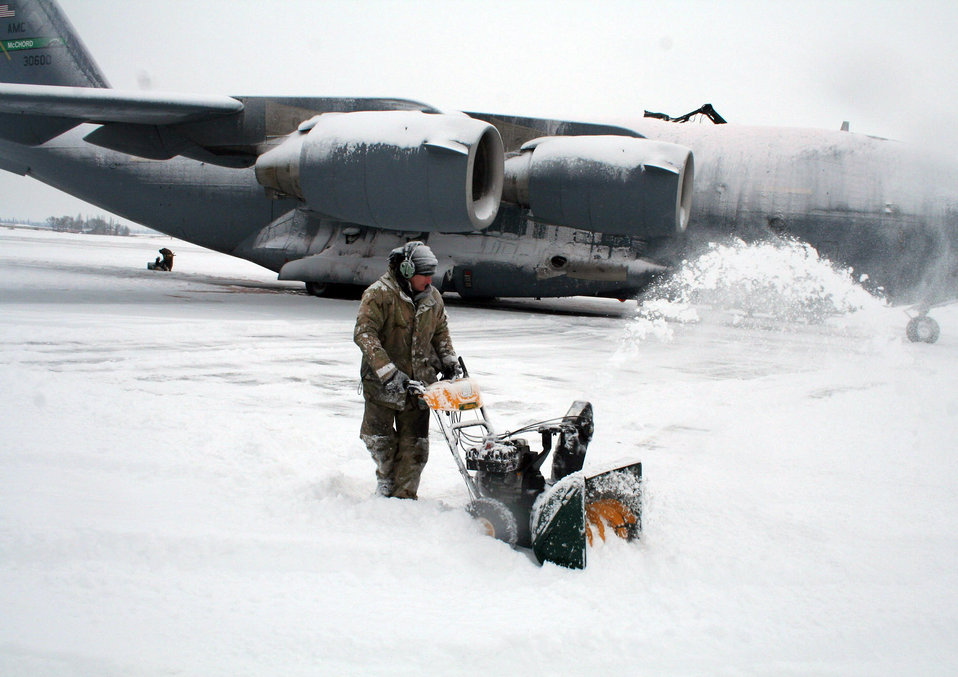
Snow flight

MANAS AIR BASE, Kyrgyzstan -- Airman 1st Class Michael Lepla digs out a C-17 Globemaster III Jan. 28 after 4 inches of snowfall during the night. With temperatures barely above zero and weekly snowstorms, maintainers here work nonstop to keep the aircraft and ramp clear of ice and snow.